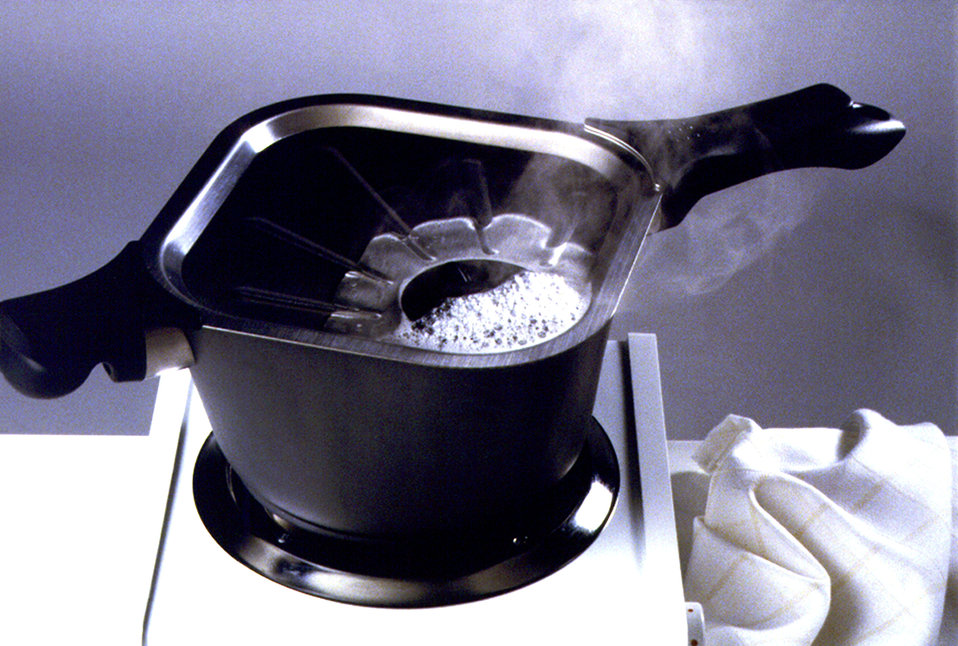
This was one of six images (PHIL# 9125 - 9130) depicting an Allegro� Cookware pot by Mirro�, the design of which was a radical departure from traditional cooking utensils. The square shape, unique lid and lightweight materials offered many ergonomic advantages. All the pots, pans and skillets were circular on their bottoms, gradually becoming square toward their tops. This cookware design made the most efficient use of standard round heat sources while at the same time offered greater cubic volume than a circular pot of the same height. Two of the corners created natural pouring spouts, a design consideration that was implemented in response to complaints common with more traditional round cookware. Handles located on the alternate two corners of the pot, aligned and interlocked with the lid handles providing safe and balanced handling.